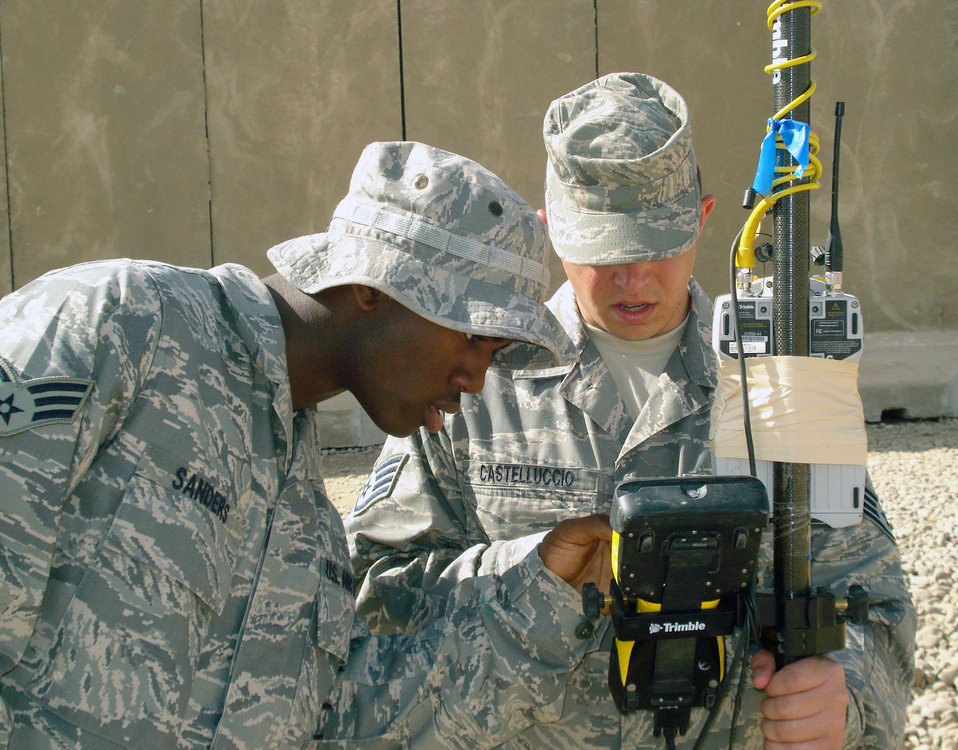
Engineering assistants help FOB quality of life

Senior Airman Renardo Sanders (left) and Staff Sgt. Frank Castelluccio set up a handheld surveying machine Jan. 7 in preparation for a topographical survey outside Balad Air Base, Iraq. The survey was used to map out the joint drainage layout. Both Airmen are 732nd Expeditionary Civil Engineering Squadron engineering assistants. Sergeant Castelluccio is deployed from Kadena Air Base, Japan, and Airman Sanders is deployed from Beale Air Force Base, Calif.